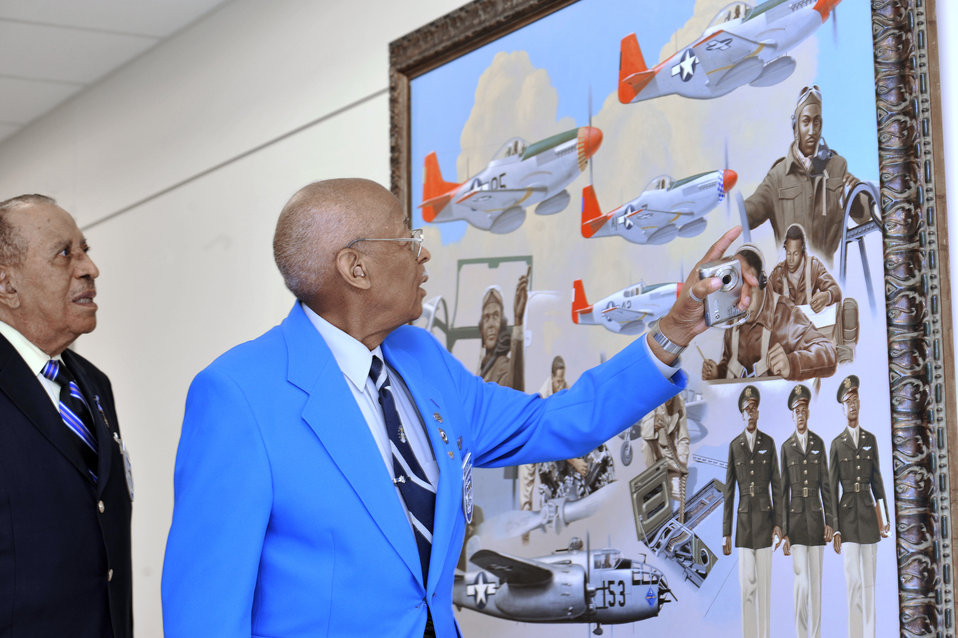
Tuskegee Airmen visit Pentagon

At the Pentagon April 20, Tuskegee Airmen Alexander Jefferson (right) and James Warren admire artwork depicting fellow Tuskegee Airmen. Four Tuskegee Airmen and retired Lt. Gen. Russell Davis were in Washington to meet with Air Force Chief of Staff Gen. Norton Schwartz and Vice Chief Gen. William Fraser III en route to visit Airmen deployed to several countries in the U.S. Central Command area of responsibility. The Airmen will visit the 332nd Air Expeditionary Wing whose origins trace back to the 332nd Fighter Group and the Tuskegee Red Tail Flyers.